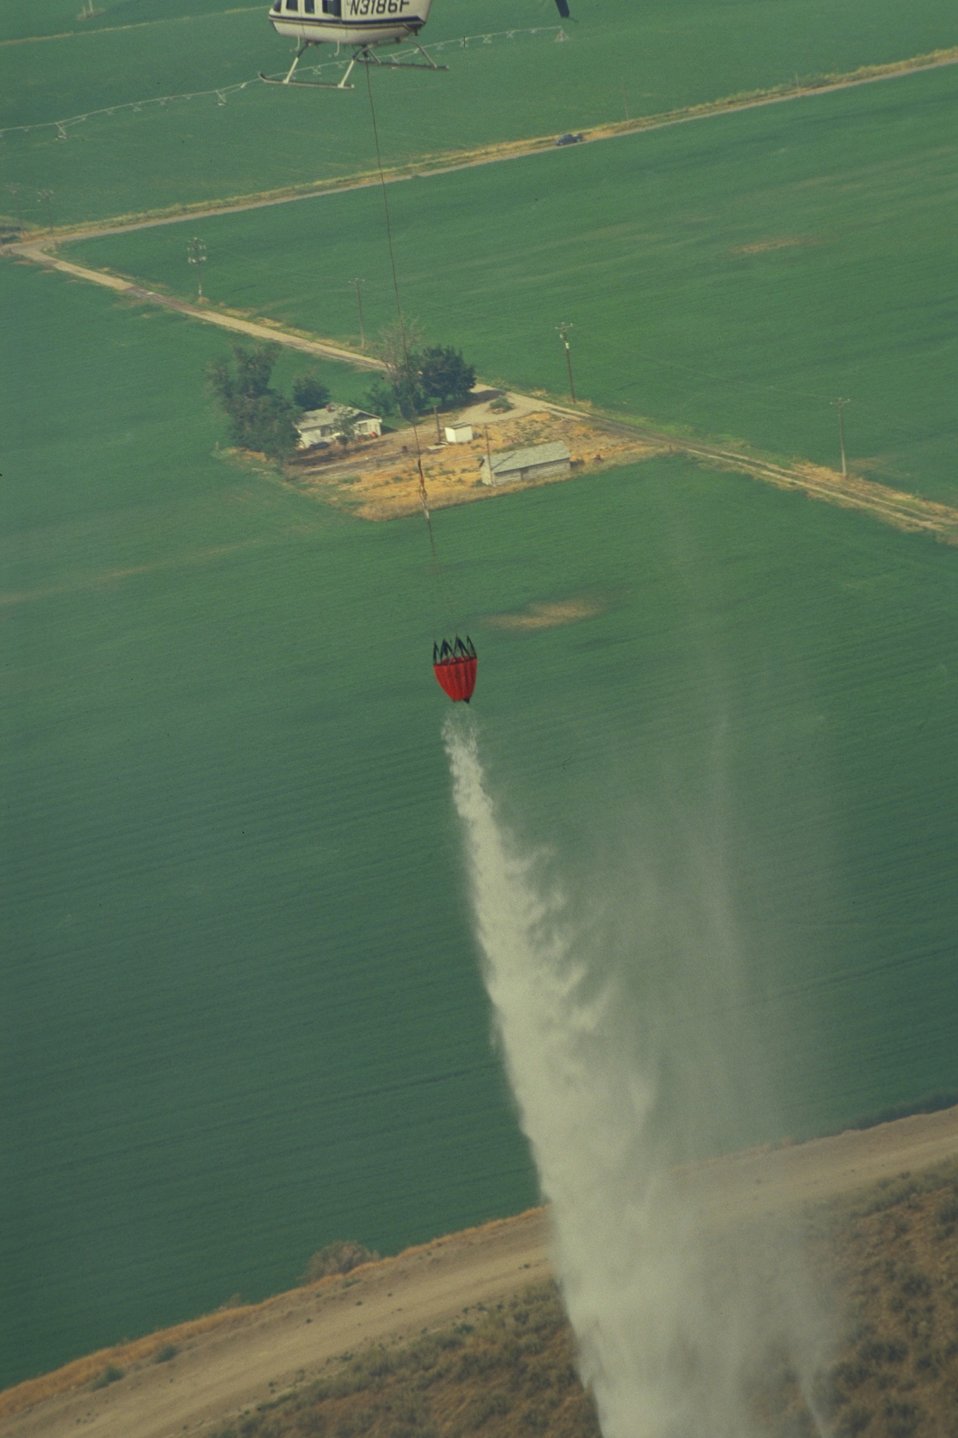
Helicopter bucket drop Fire Season 2000 Lower Snake River District LSRD